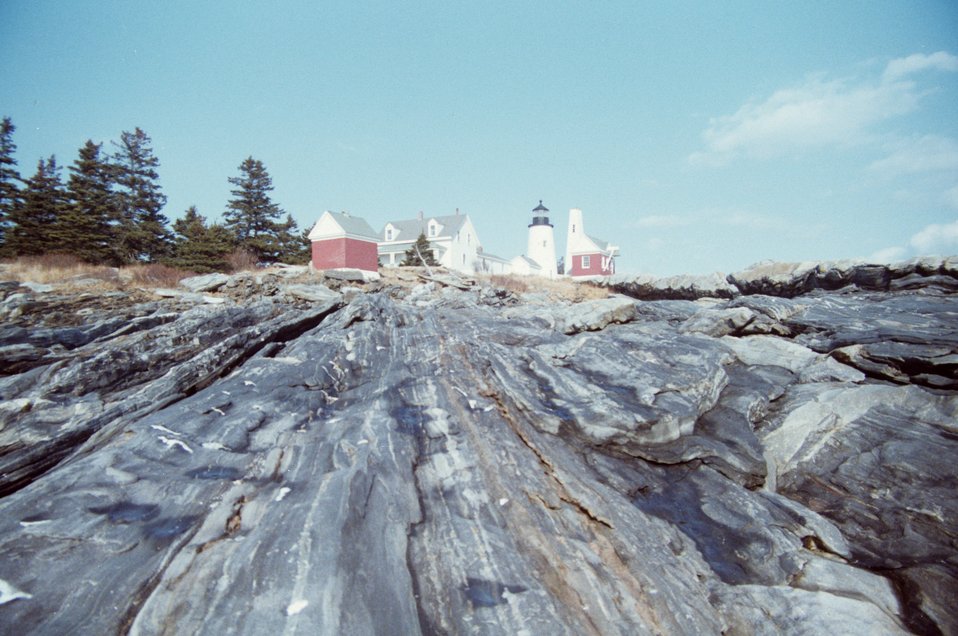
Pemaquid Point Lighthouse